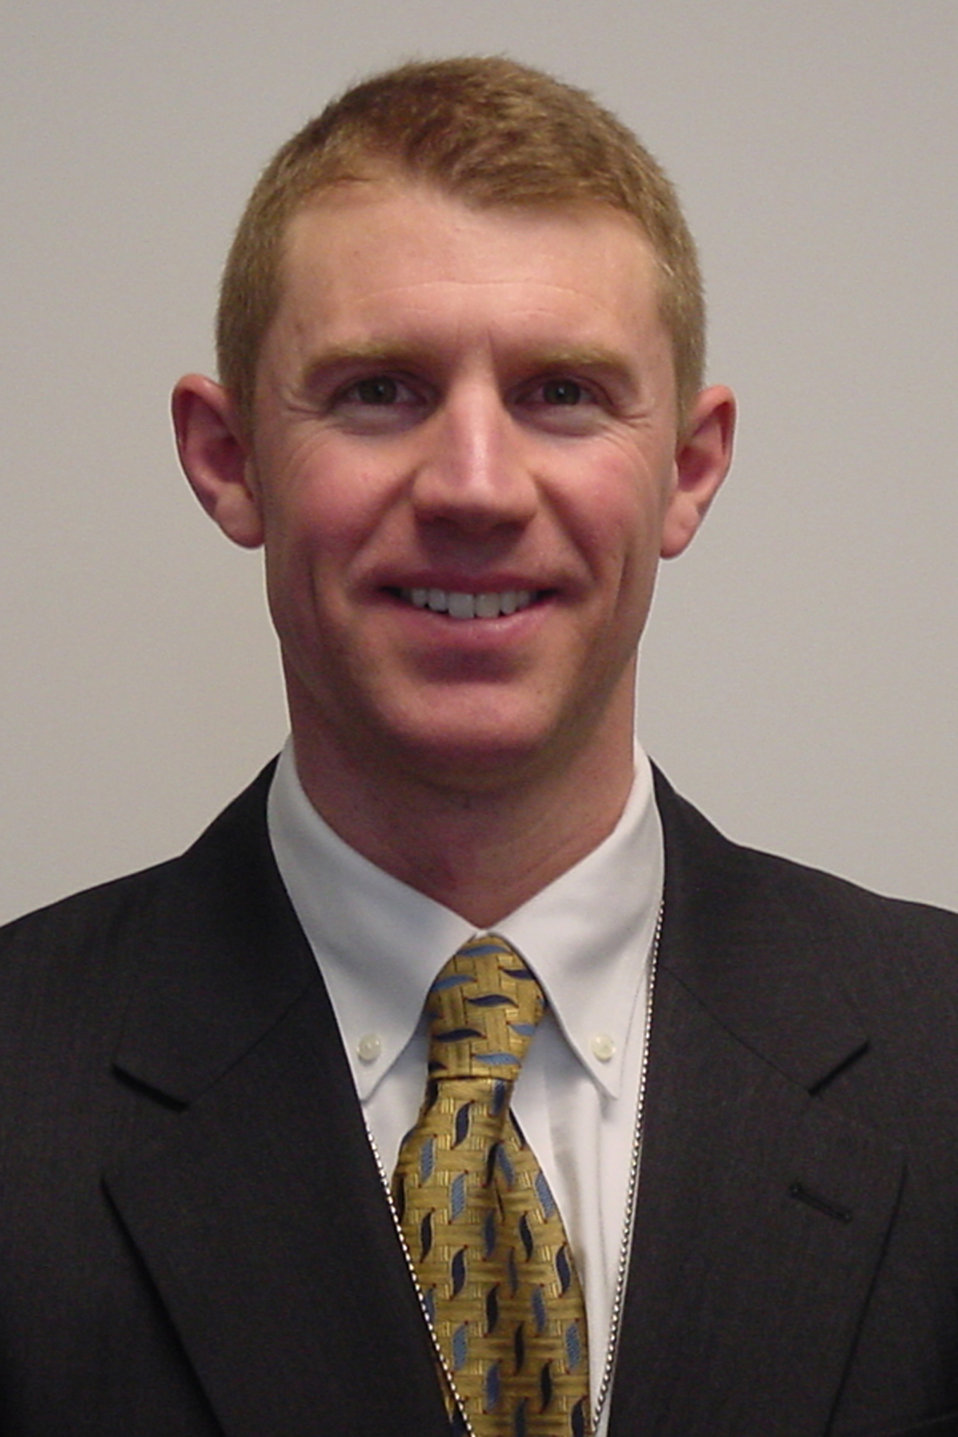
Matthew Barrett